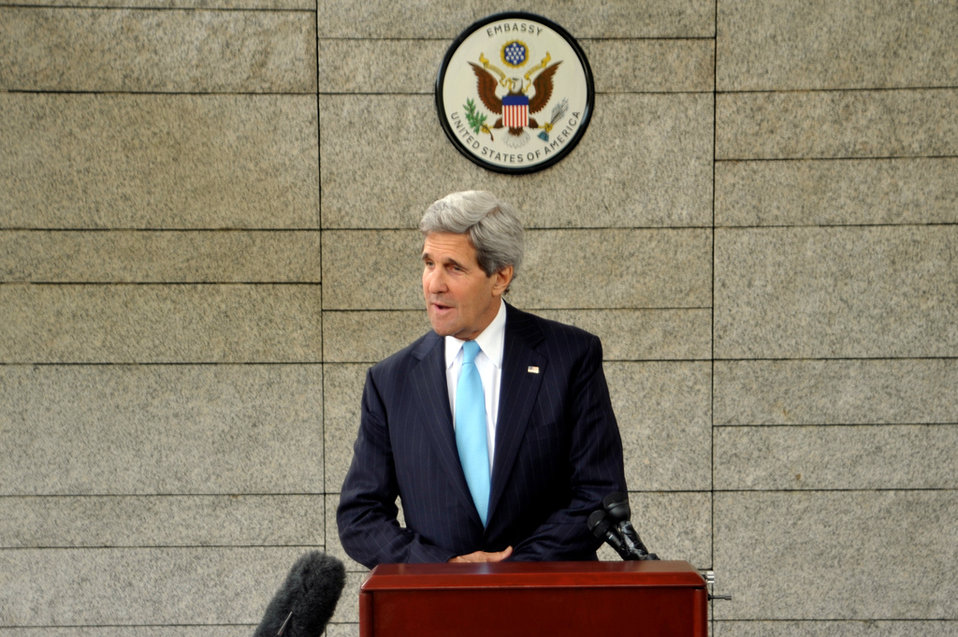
Secretary Kerry Addresses Reporters in Brunei

U.S. Secretary of State John Kerry makes a statement about Syria to reporters at the U.S. Embassy in Bandar Seri Begawan, Brunei, following his meeting with Russian Foreign Minister Sergey Lavrov on July 2, 2013.